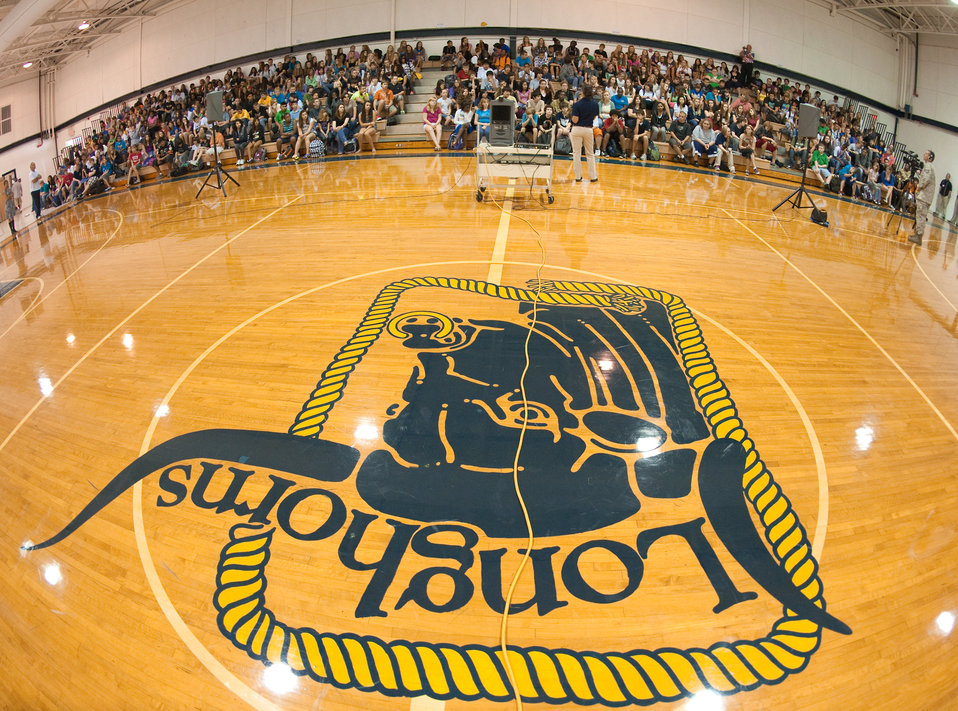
Small kestral captures school's attention

Cadet 3rd Class Danielle Cortez and